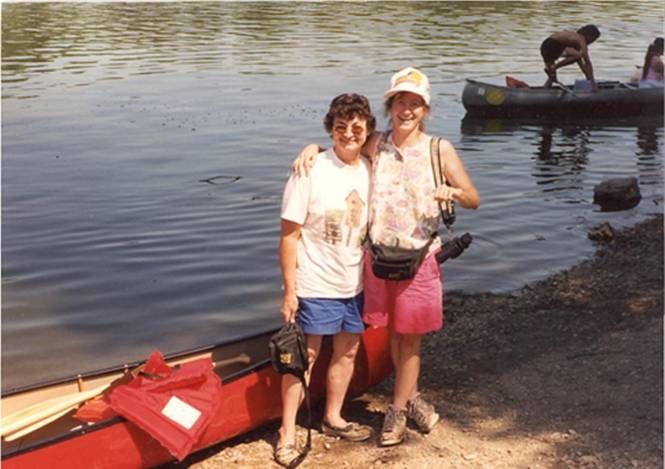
Molly Stoddard and mom

Molly Stoddard, right, with her mom Ann Nordstrom. Today, Molly Stoddard is an instructional systems specialist at the
Prairie Wetlands Learning Center, a U.S. Fish and Wildlife Service facility in Fergus Falls, Minnesota,